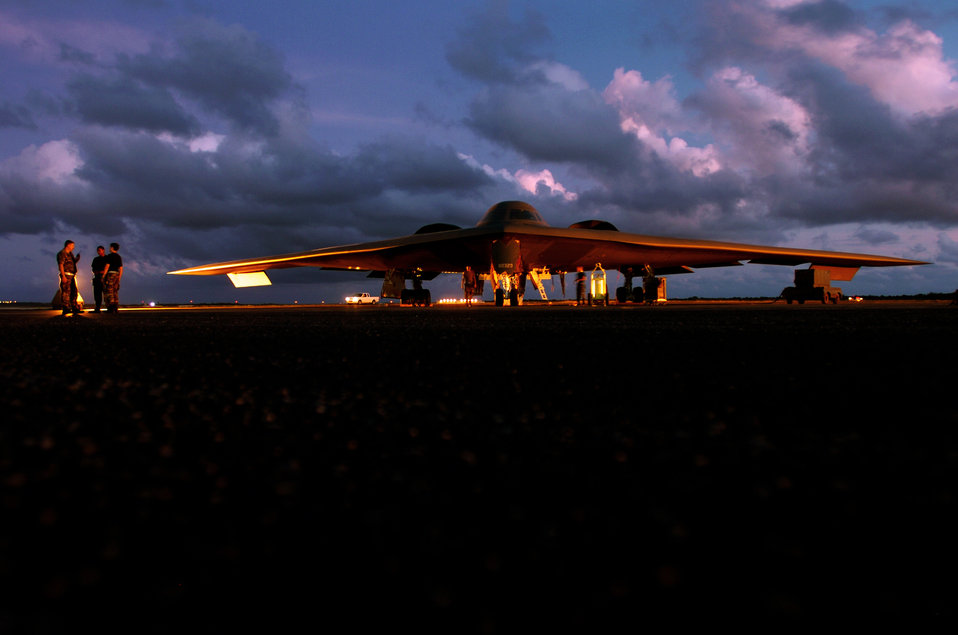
Keeping Spirits high

ANDERSEN AIR FORCE BASE, Guam -- Aircraft mechanics prepare a B-2 Spirit bomber before a morning mission here. Bomber aircraft have had an ongoing presence on the island since February 2004. The Airmen are deployed from the 509th Bomb Wing at Whiteman Air Force Base, Mo.